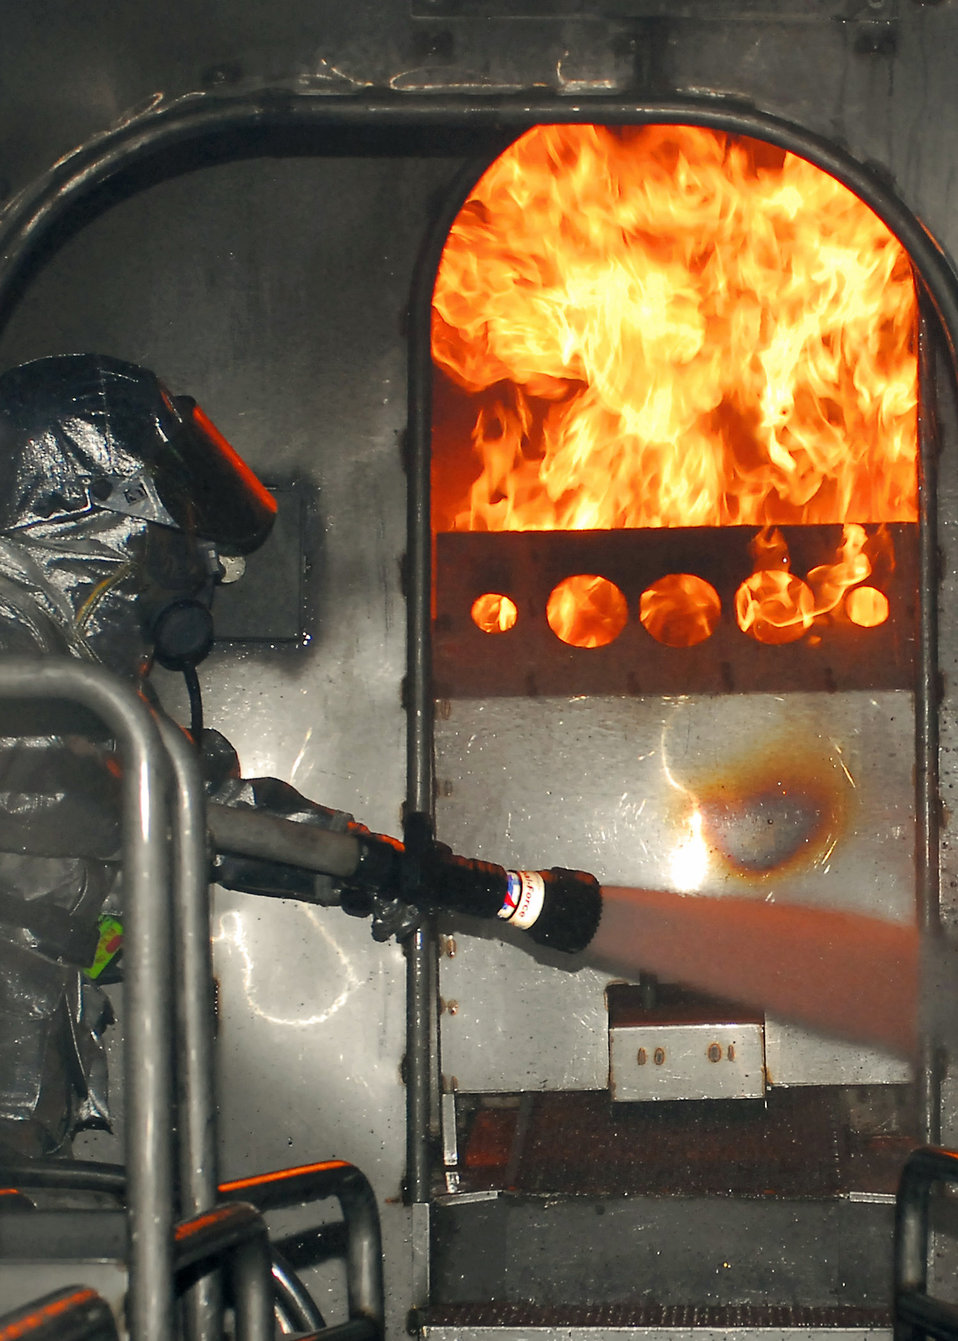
Burning desire

Firefighters from the 386th Expeditionary Civil Engineer Squadron extinguish a fire on an aircraft fire trainer Nov. 24 at an air base in Southwest Asia. The firefighters must complete one daytime and nighttime live fire burn annually.